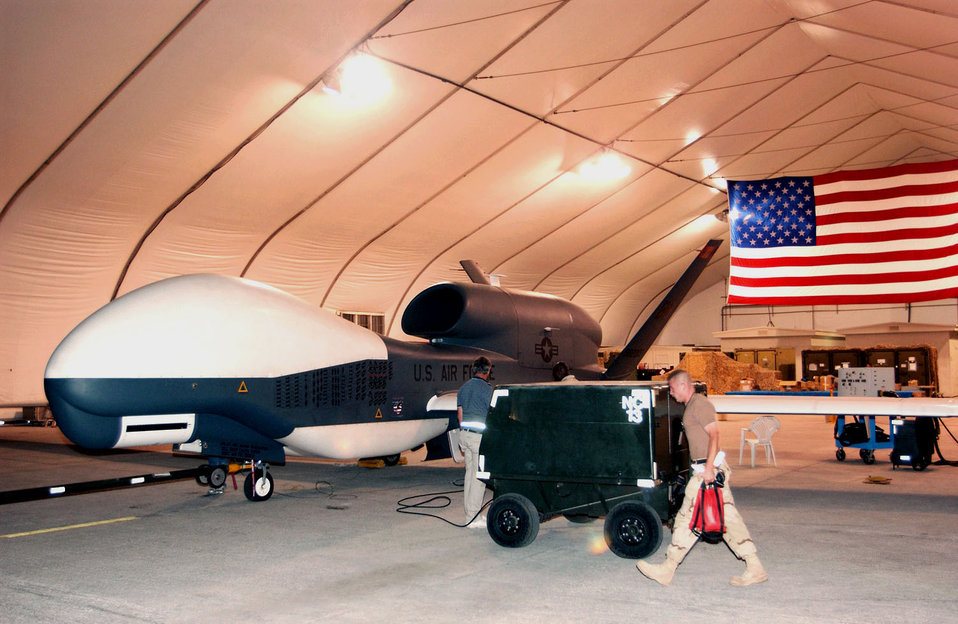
Pilots make long commute to Global Hawk University

SOUTHWEST ASIA -- Global Hawk is an unmanned aerial vehicle. It is forward deployed to Southwest Asia to provide real-time imagery in support of operations Enduring Freedom and Iraqi Freedom.